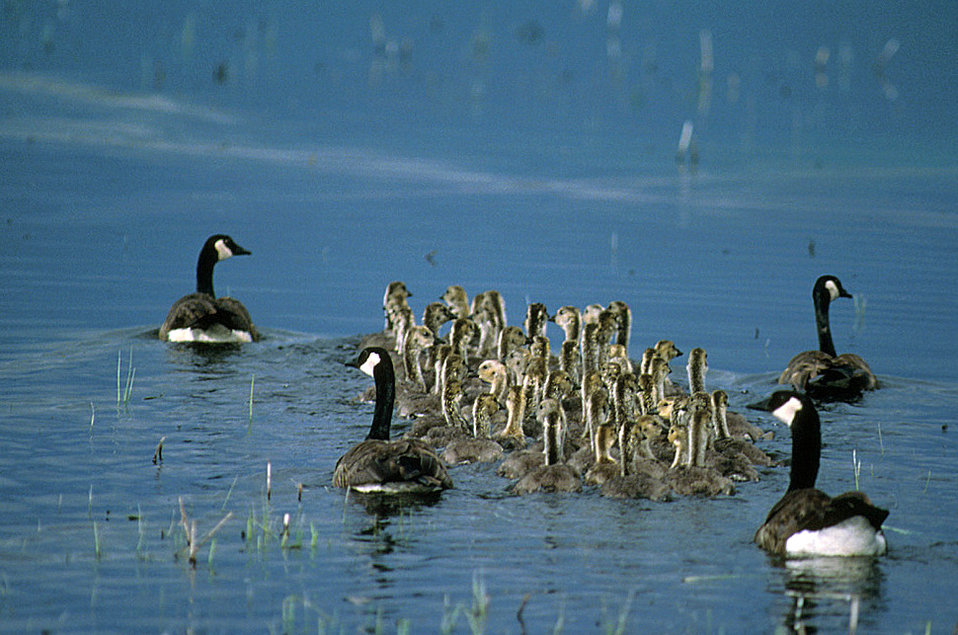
Canada Goose (gang brood H)